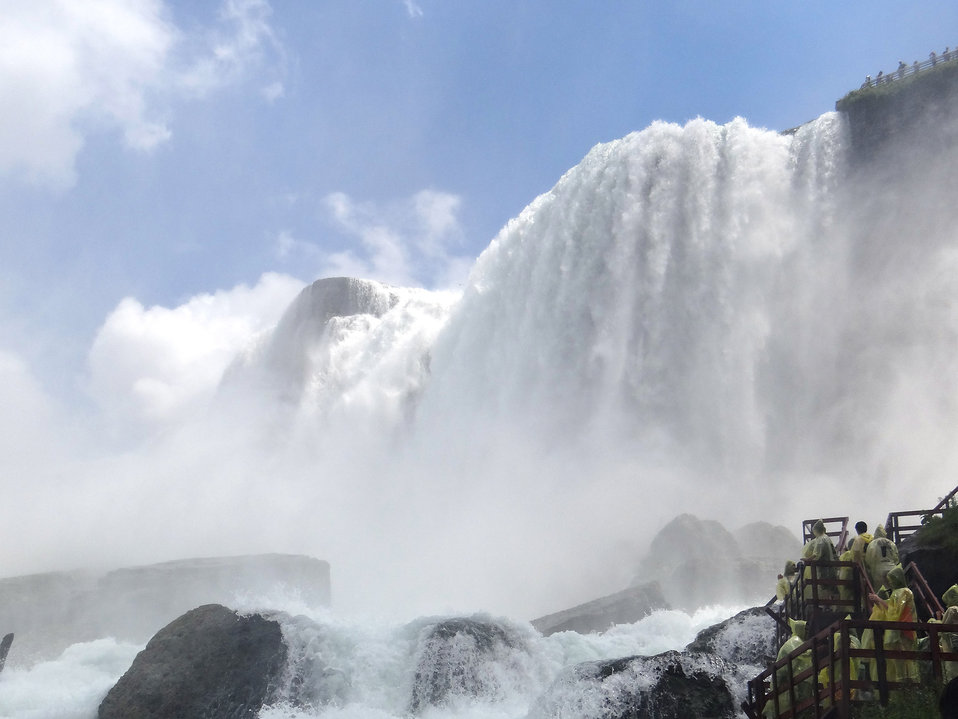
The falls

Niagara falls looking up from cave of the winds.